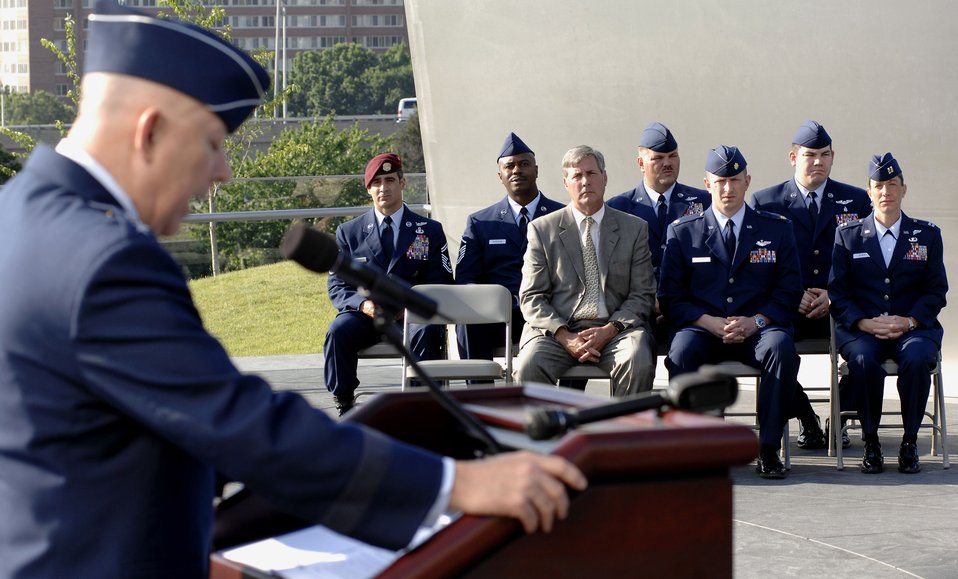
Air Force Combat Action Medals

Air Force Chief of Staff Gen. T. Michael Moseley speaks to the crowd before the Air Force Combat Action Medals were presented to six Airmen. They were the first to receive the medal in a ceremony held at the Air Force Memorial in Arlington, Va.